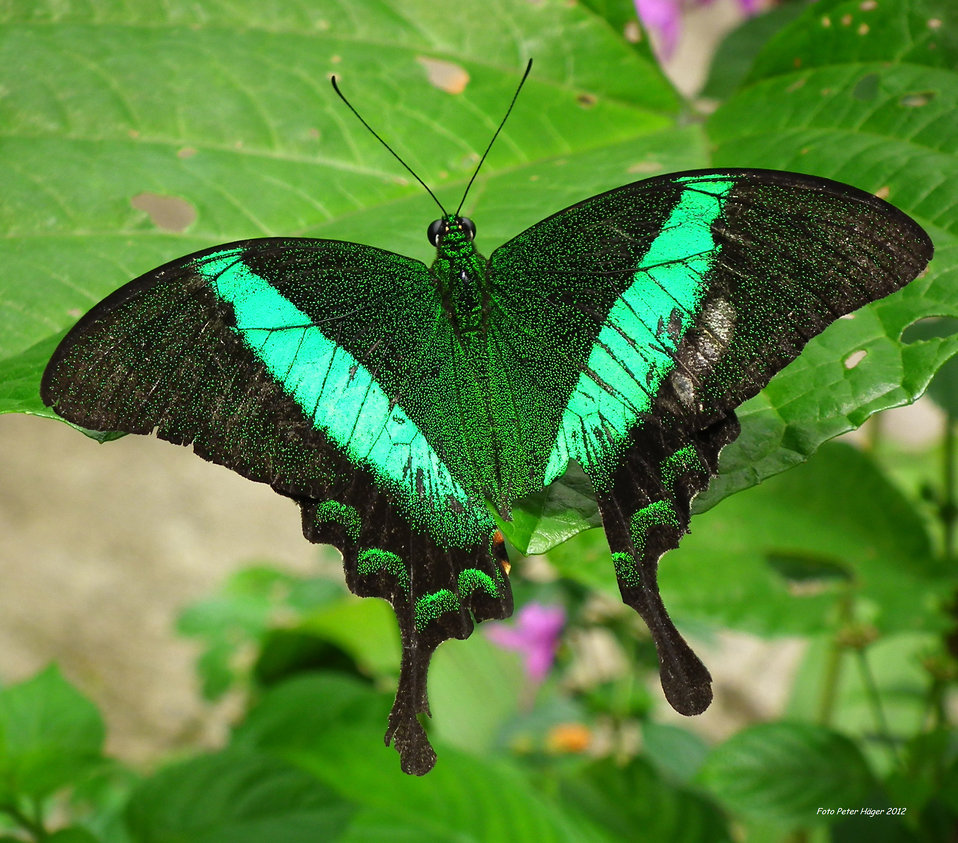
Beautiful butterfly

Papilio palinurus, photo taken in bohol, philippines.